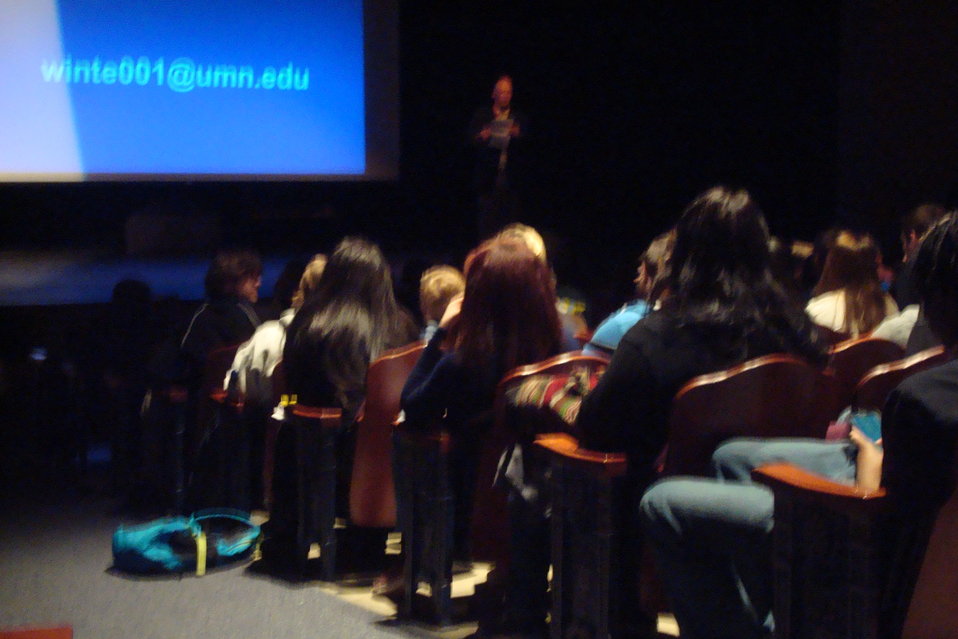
NDFW Event at Tartan High School SADD

Students Against Destructive Decisions (SADD) hosted an assembly with guest speaker Dr. Ken Winters of the Center for Adolescent Substance Abuse Research (CASAR) at the University of Minnesota, as part of SADD's 'Signature Event' in Oakdale, Minnesota